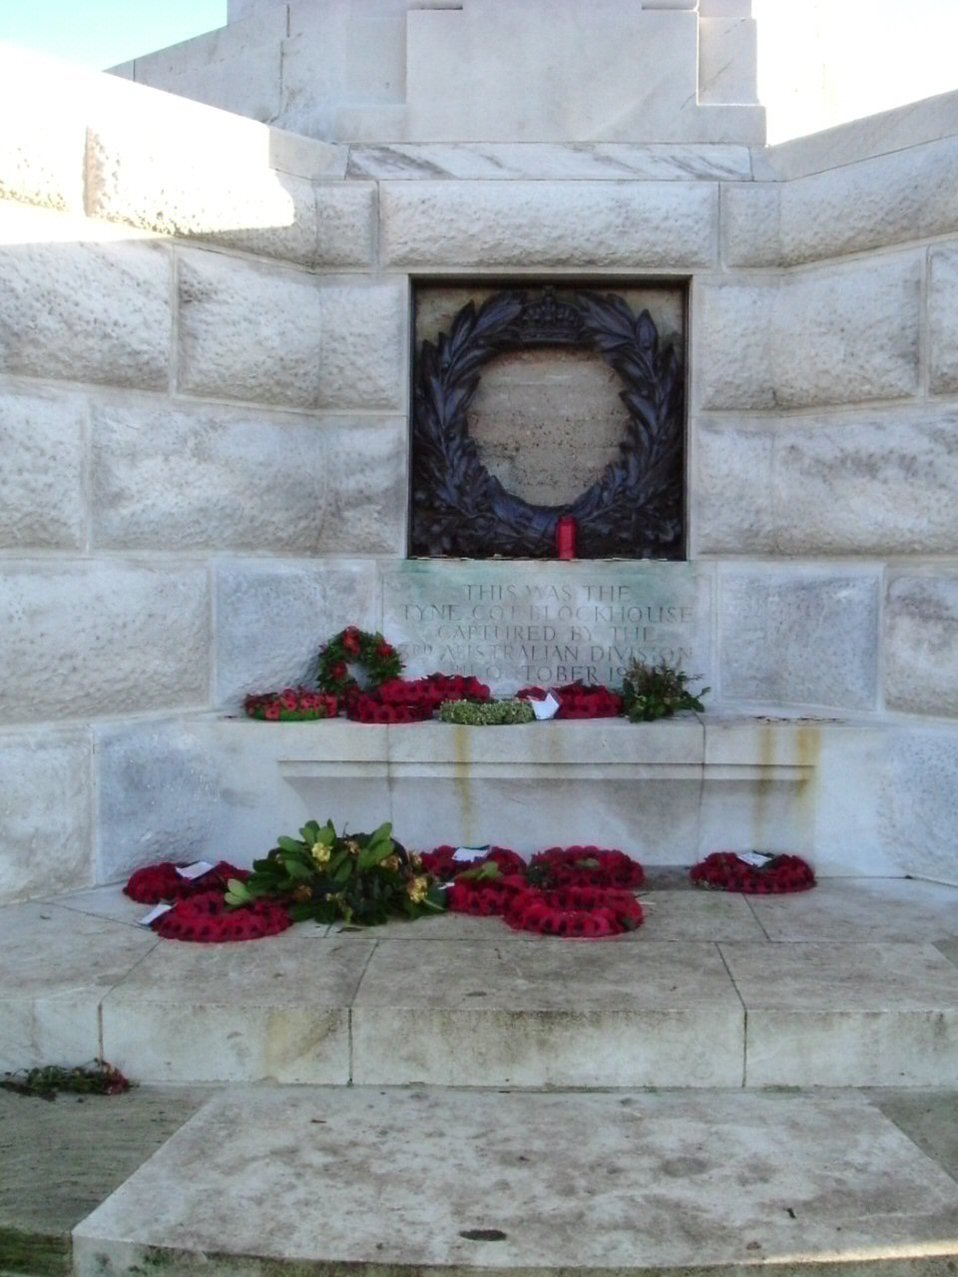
Tyne Cot Cemetery is the largest Britsh Cemetery containing nearly 12.000 man. It has 3 Germain pill boxes, which has been captured by Australian divison on 1917, October 4.